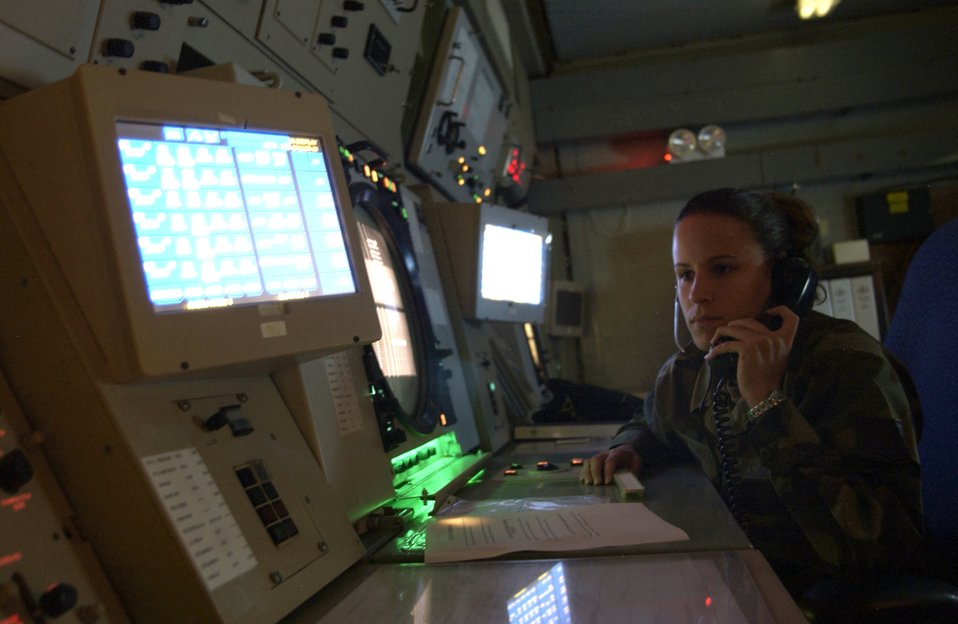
Airmen keep Soto Cano's runway running

SOTO CANO AIR BASE, Honduras -- Staff Sgt. Amber Charlesworth checks the ground control approach radar for incoming traffic here. During the dry season in Honduras, there is plenty of activity at the base, home of Joint Task Force-Bravo, which conducts counterdrug and humanitarian support operations. Sergeant Charlesworth is an air traffic control watch supervisor.